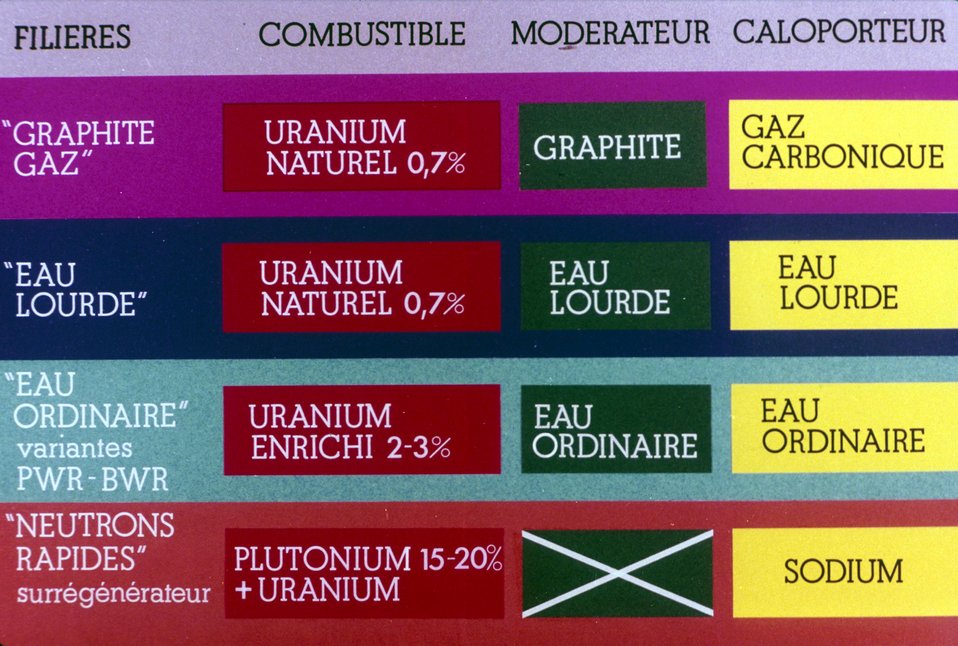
Tableau des filiÌres.